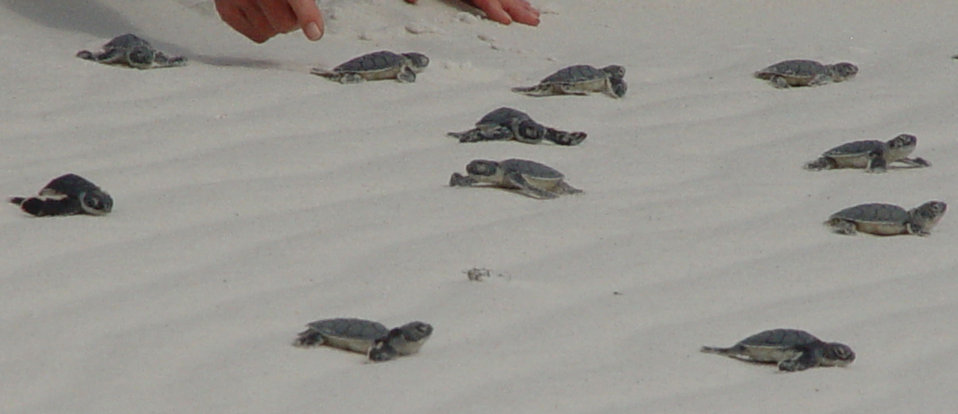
Turtle patrol

EGLIN AIR FORCE BASE, Fla. (AFPN) -- Eglin's sea turtle patrol volunteers released several baby green sea turtles Oct. 27. If they reach adulthood, these baby green sea turtles may reach a size of six feet long and weigh up to 450 pounds. The shell is smooth and is colored gray, green, brown and black. Hatchlings are black on top and white on the bottom. Age at sexual maturity is estimated at 20-50 years.